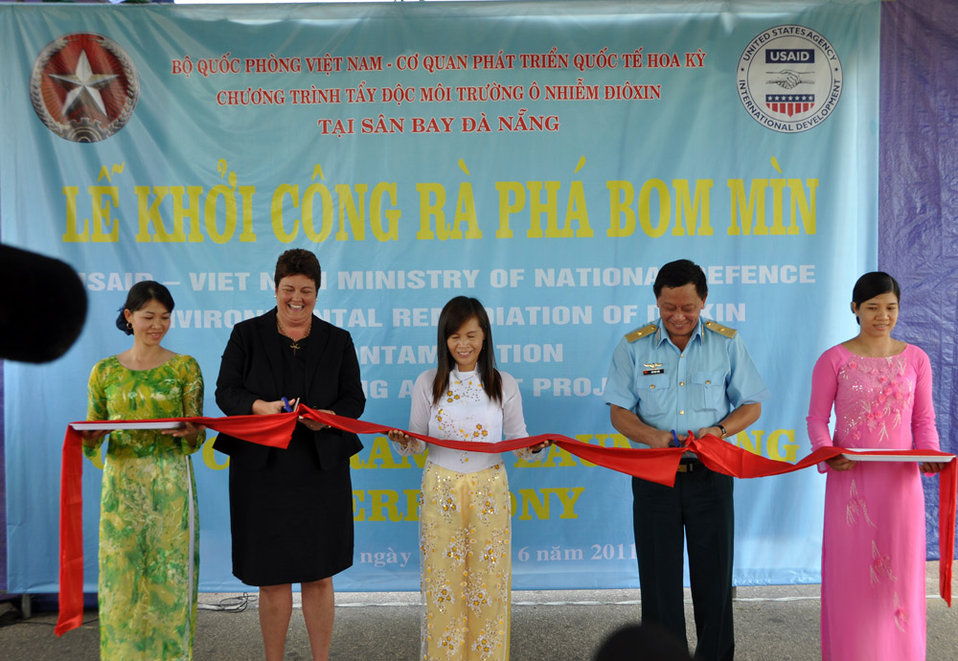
UXO clearance ceremony, June 17, 2011, in Danang, Vietnam.